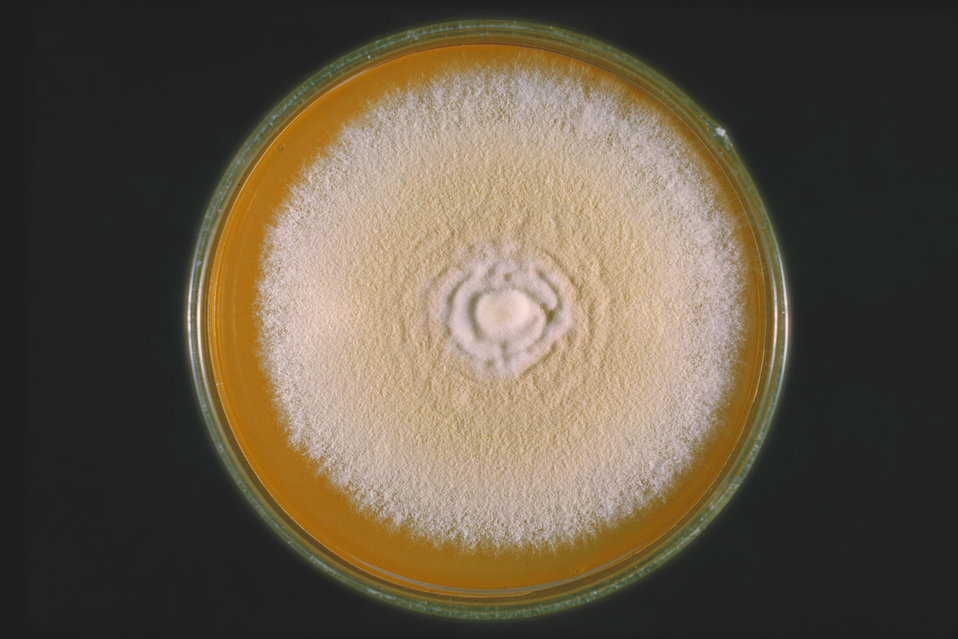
This is a top view of a plate culture containing the fungus Trichophyton mentagrophytes.